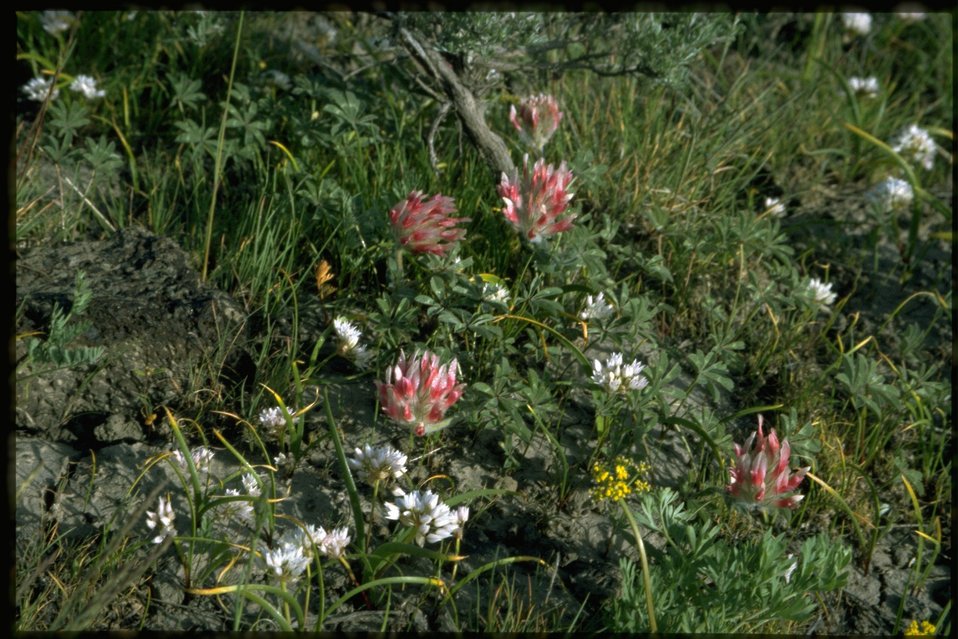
Farshot of Tolmie's Onion wildflowers and Big-headed Clover.